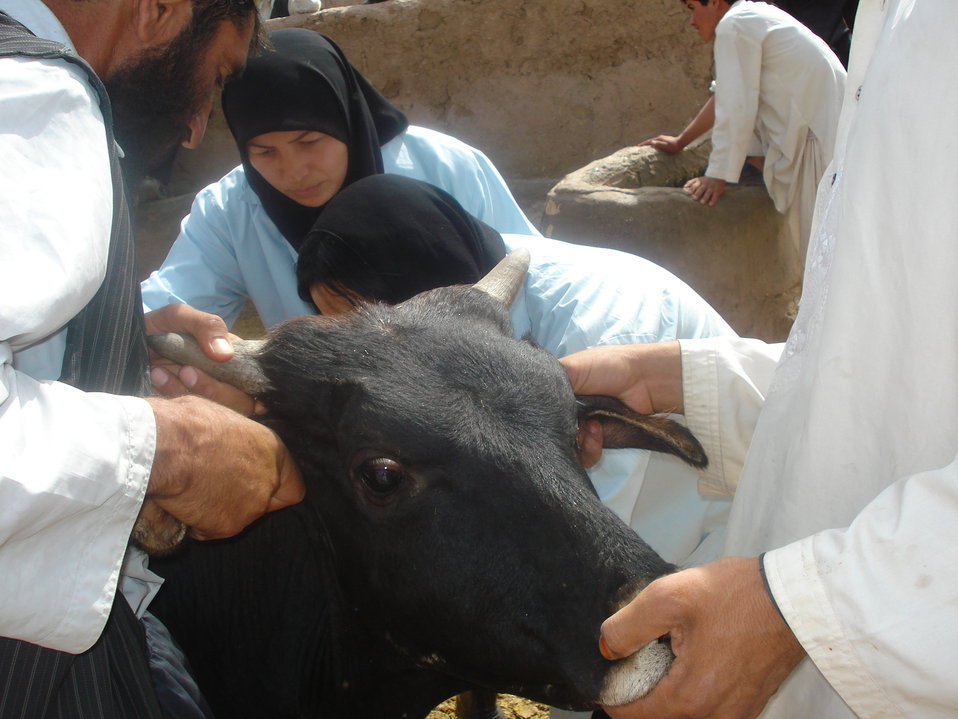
Paravet Training